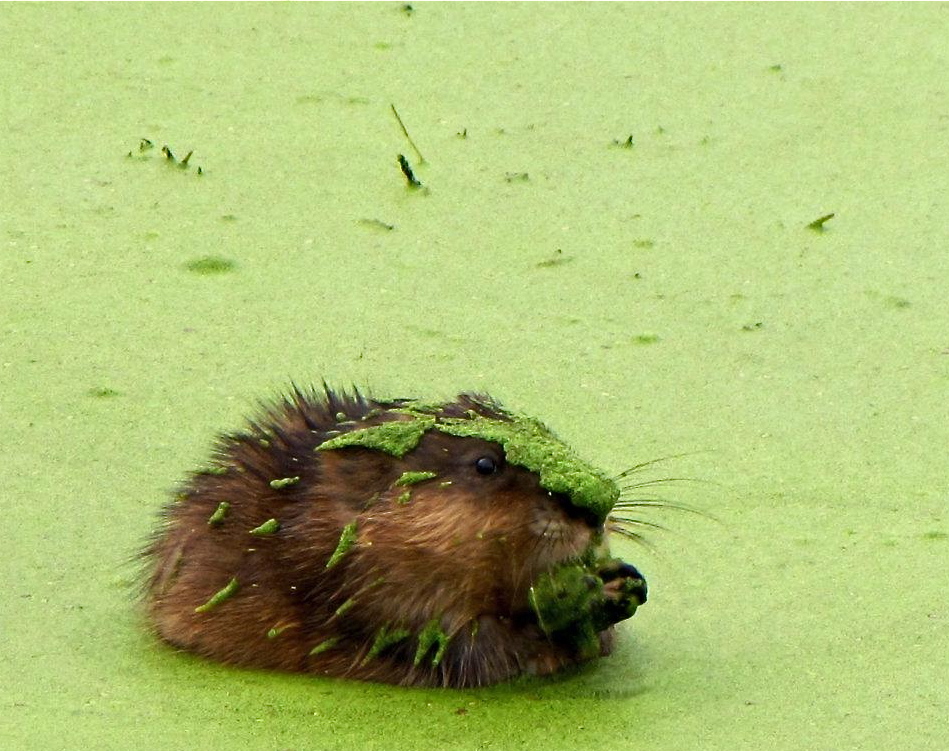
muskrat

Port Louisa National Wildlife Refuge, IA
Autumn 2011